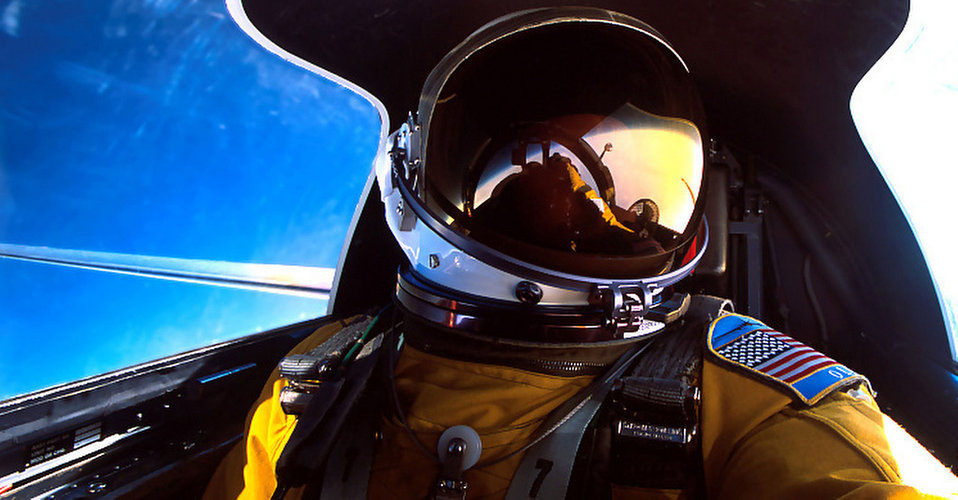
U-2 pilot looks outside while flying the aircraft. U-2 pilots wear full-pressure suits that ensure survivability during depressurization.